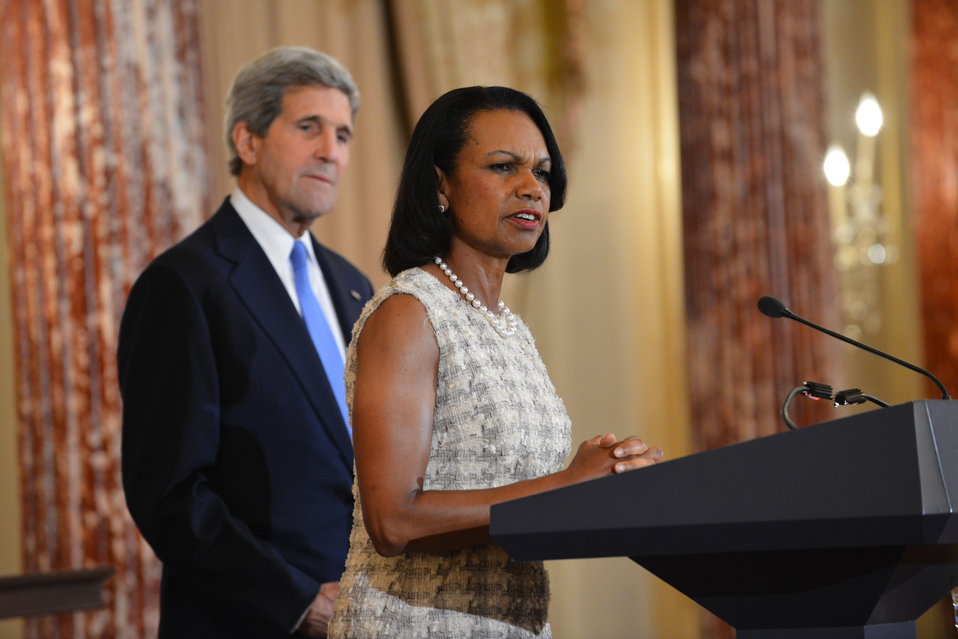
Former Secretary of State Condoleezza Rice delivers remarks at a portrait unveiling ceremony in her honor at the U.S. Department of State in Washington, D.C. on June 18, 2014.